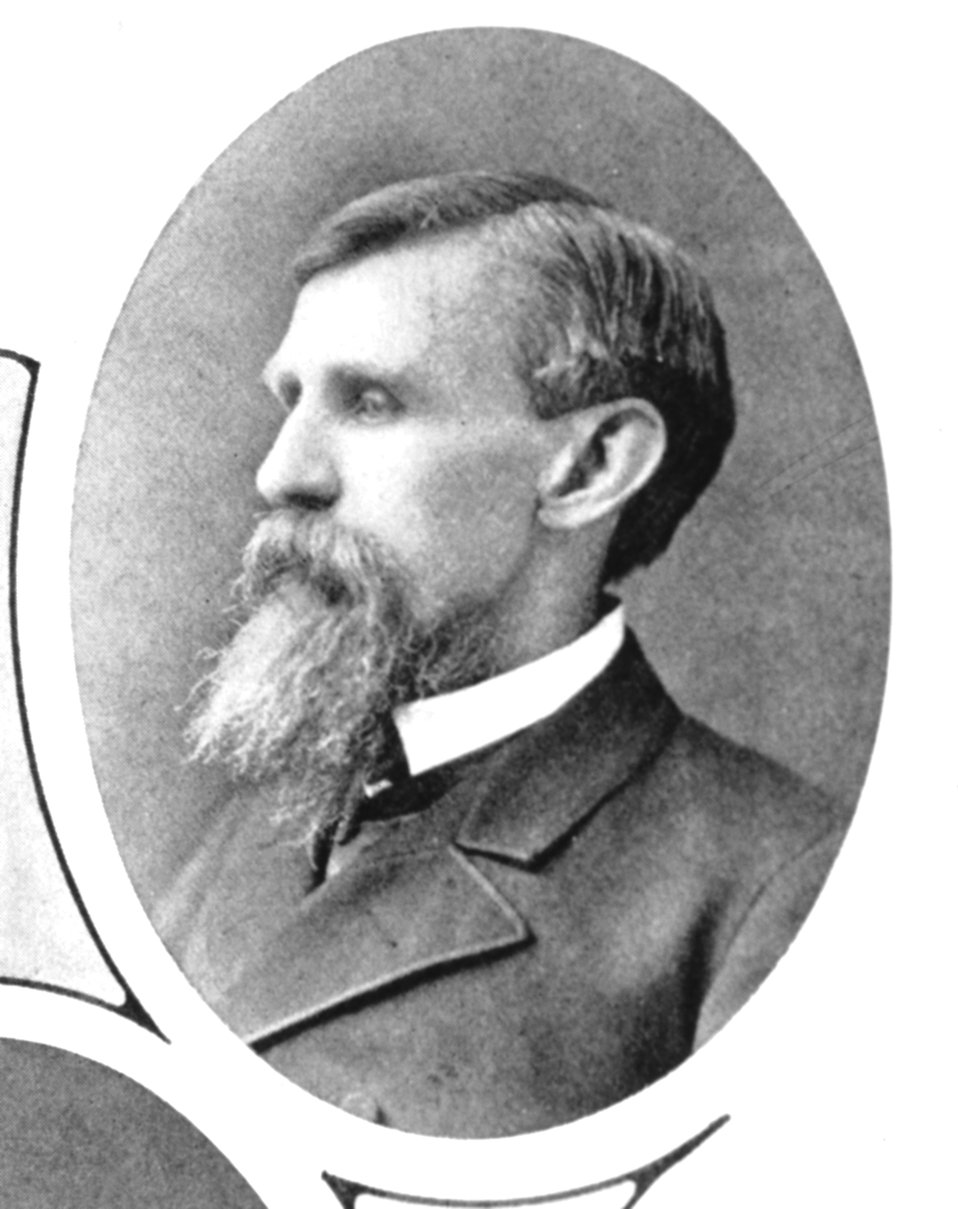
Marshall McDonald, third United States Commissioner of Fisheries, tenure 1888-1895.